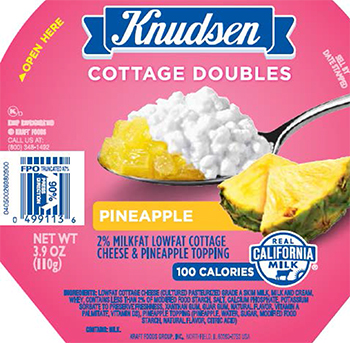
RECALLED – Cottage Cheese products

May 17, 2014 – Product Recall – Kraft Foods Group Voluntarily Recalls Select Cottage Cheese Products Due to Out-of-Standard Storage Temperatures
Certain Knudsen Cottage Cheese, Breakstone’s Cottage Cheese, Simply Kraft Cottage Cheese and Daily Chef Cottage Cheese Products Included in the Recall
.